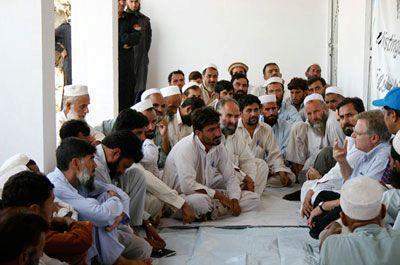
Assistant Secretary Schwartz Sits With Elders

U.S. Assistant Secretary of State for Population, Refugees, and Migration Eric Schwartz sits with elders at the Jalozai camp for conflict-affected Pakistani internally displaced persons near Peshawar, Pakistan, on October 9, 2010. Assistant Secretary Schwartz traveled to Pakistan from October 8-10, 2010. There, he discussed with Pakistani Interior Minister Rehman Malik issues relating to Afghan refugees, some 1.6 million of whom are registered in Pakistan. He expressed the American people’s appreciation for Pakistan’s tolerance toward this community. He also announced an additional $1 million contribution to the Refugee Affected and Hosting Areas (RAHA) initiative, a joint Pakistan government/UN program that provides support both to the refugees and the Pakistani communities that host them. While in Pakistan, he also visited the Jalozai camp near Peshawar, which hosts approximately 97,000 Pakistanis who have been displaced by conflict. The United States has provided over $280 million in assistance to this group of vulnerable Pakistanis in 2010.